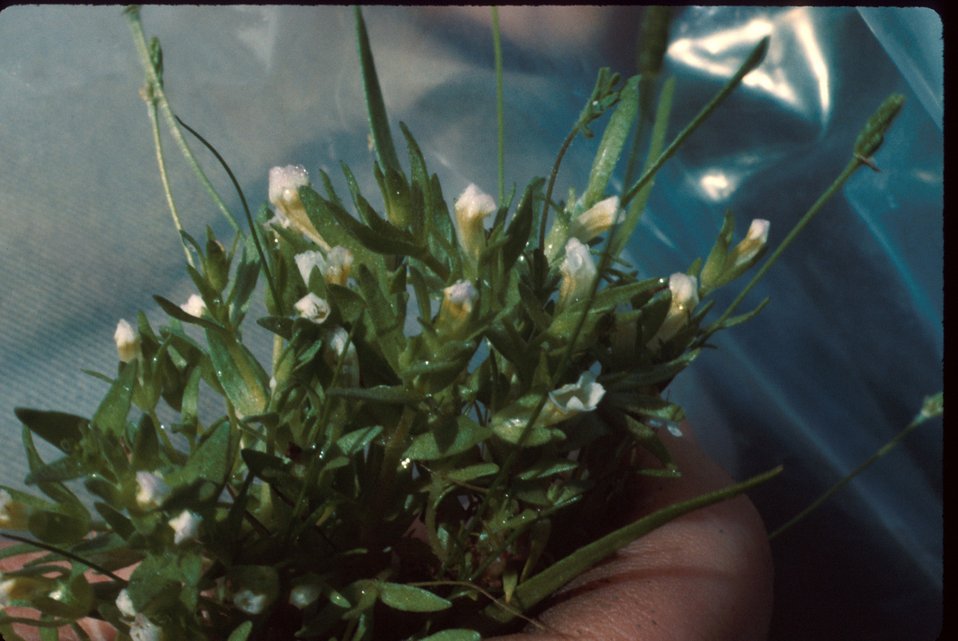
Downwingia Wildflower